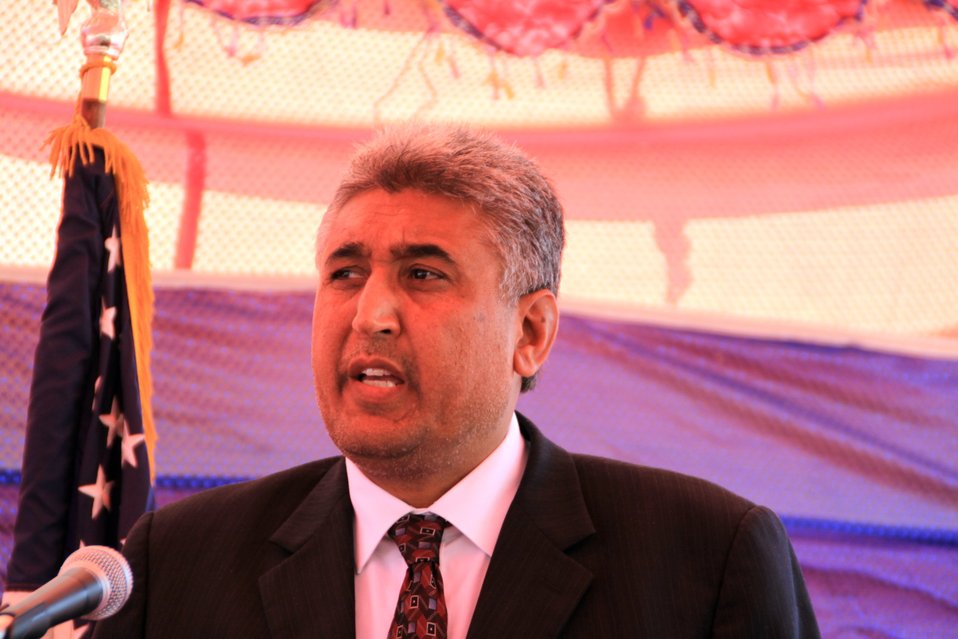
Baddam Bagh Farm